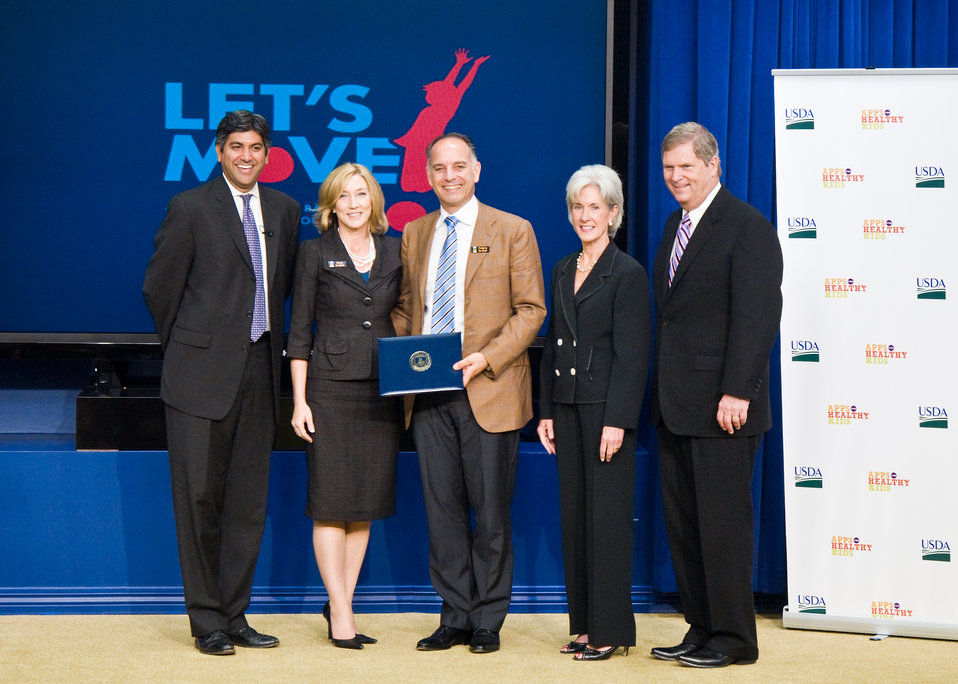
Aneesh Chopra, White House Chief Technology Officer, Health and Human Services Secretary Kathleen Sebelius and Agriculture Secretary Tom Vilsack present the Third Prize to Frederic and Marta De Wulf, Bellevue, Washington, developers of the game 'Smash Your Food,' of The Apps for Healthy Kids competition at the White House, in Washington, DC, on Wednesday, September 29, 2010. The Apps for Healthy Kids competition is part of First Lady Michelle Obama’s Let’s Move campaign to end childhood obesity within a generation. The competition challenges software developers, game designers, students and other innovators to develop fun and engaging software tools and games to urge children, especially “tweens” (children ages 9-12) – directly or through their parents – to eat better and be more physically active. 'Smash Your Food,' is a guessing game bursting with realism and surprise. It lets children see and hear foods like a milkshake, or a burger, explode - while learning how much sugar, salt and oil their favorite foods are hiding. USDA Photo 10di1506-120 by Bob Nichols.